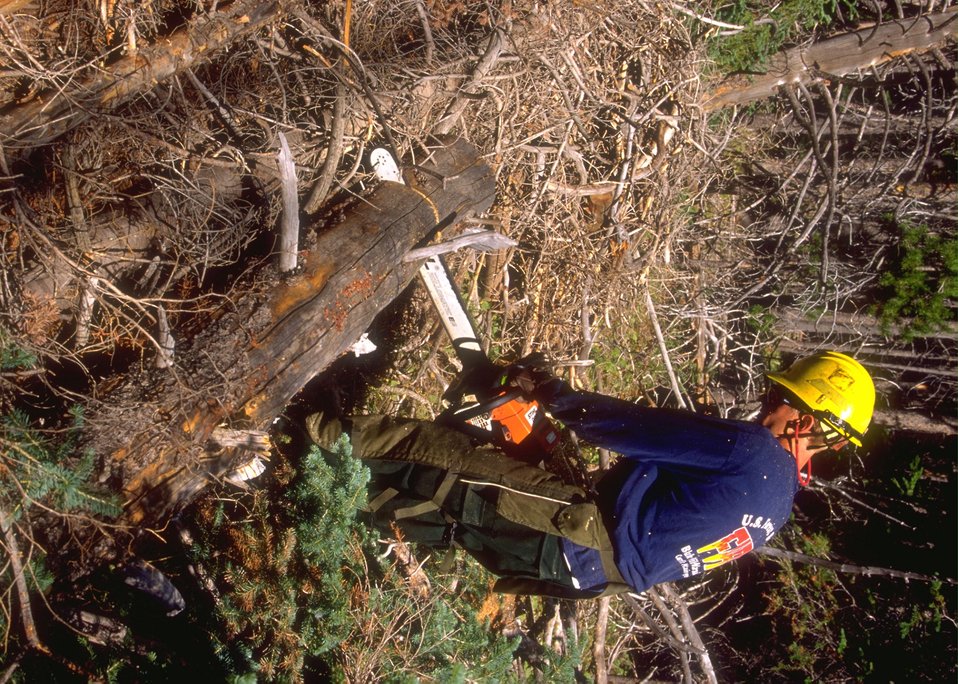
Fuels reduction management in progress at Muddy Mountain Recreation Area, Casper Field Office.